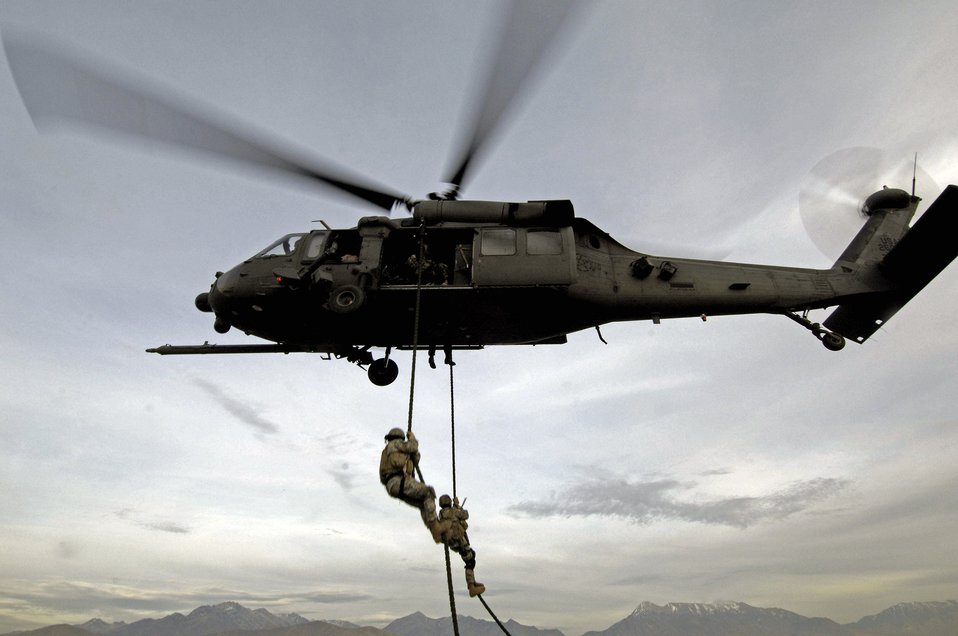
Combat search and rescue training in Utah

A Utah National Guard Soldier and 19th Special Forces member are lifted on board an HH-60 Pave Hawk over the Utah Test and Training Range during a combat search and rescue integration exercise Nov. 9. Members of the 34th Weapons Squadron from Nellis AFB led the search and recovery training. The exercise expanded the integration with Utah's 211th Aviation Group AH-64 Apache Joint Rotary Wing, 4th Fighter Squadron F-16 Fighting Falcon assets from Hill AFB, Utah, and special operations forces. Exercise participants also conducted extensive joint combat search and rescue operations against surface-to-air threats. The exercise is being run held Nov. 6 through 15.